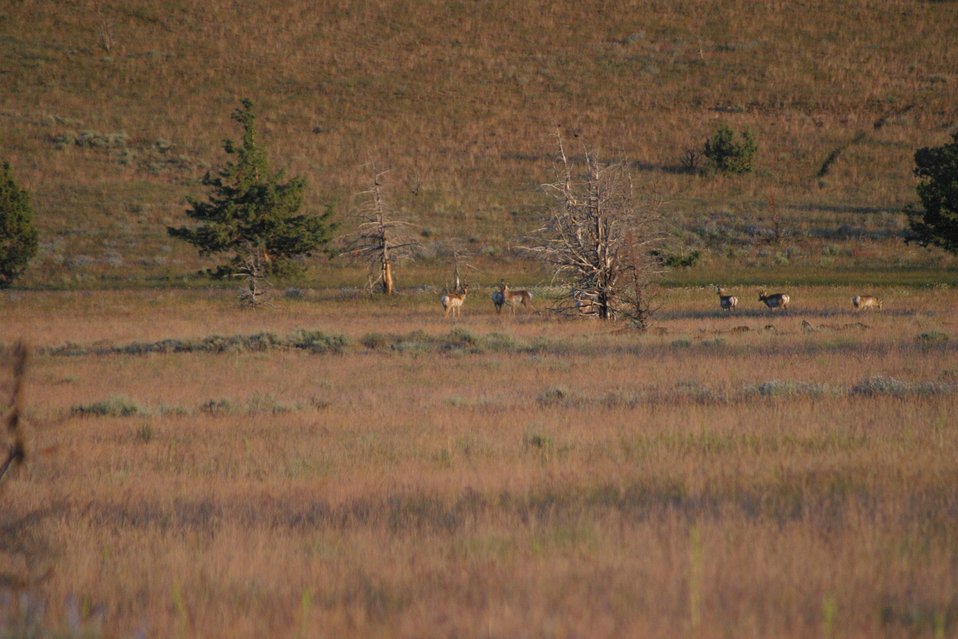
Prong Horn in the Kiger Wild Horse Herd Management Area.